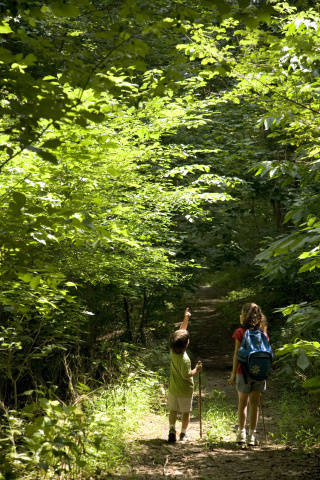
Two children hiking in the woods

Photo credit: USFWS/Steve Hillebrand

Changes in distribution, productivity, and health of forests from increased drought, fires, pests or other climate-related factors will have direct consequences for both global carbon sequestration and the forest products industry, as well as fire risk and sedimentation of water sources, and will also influence other uses of forested ecosystems such as recreation